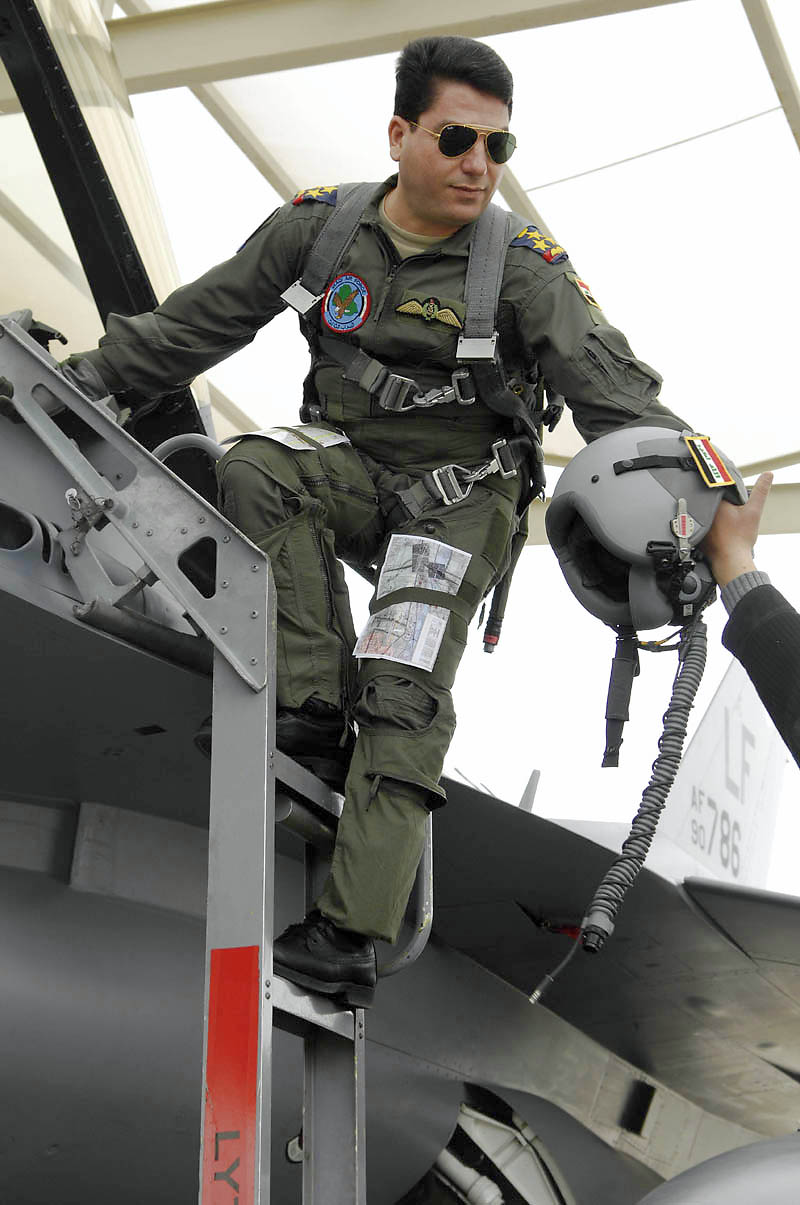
Iraqi general visits Luke, flies in F-16

Iraqi air force Brig. Gen. Ali Al-Aaragy enters a 63rd Fighter Squadron F-16 Fighting Falcon before a Dec. 15 flight at Luke Air Force Base, Ariz.